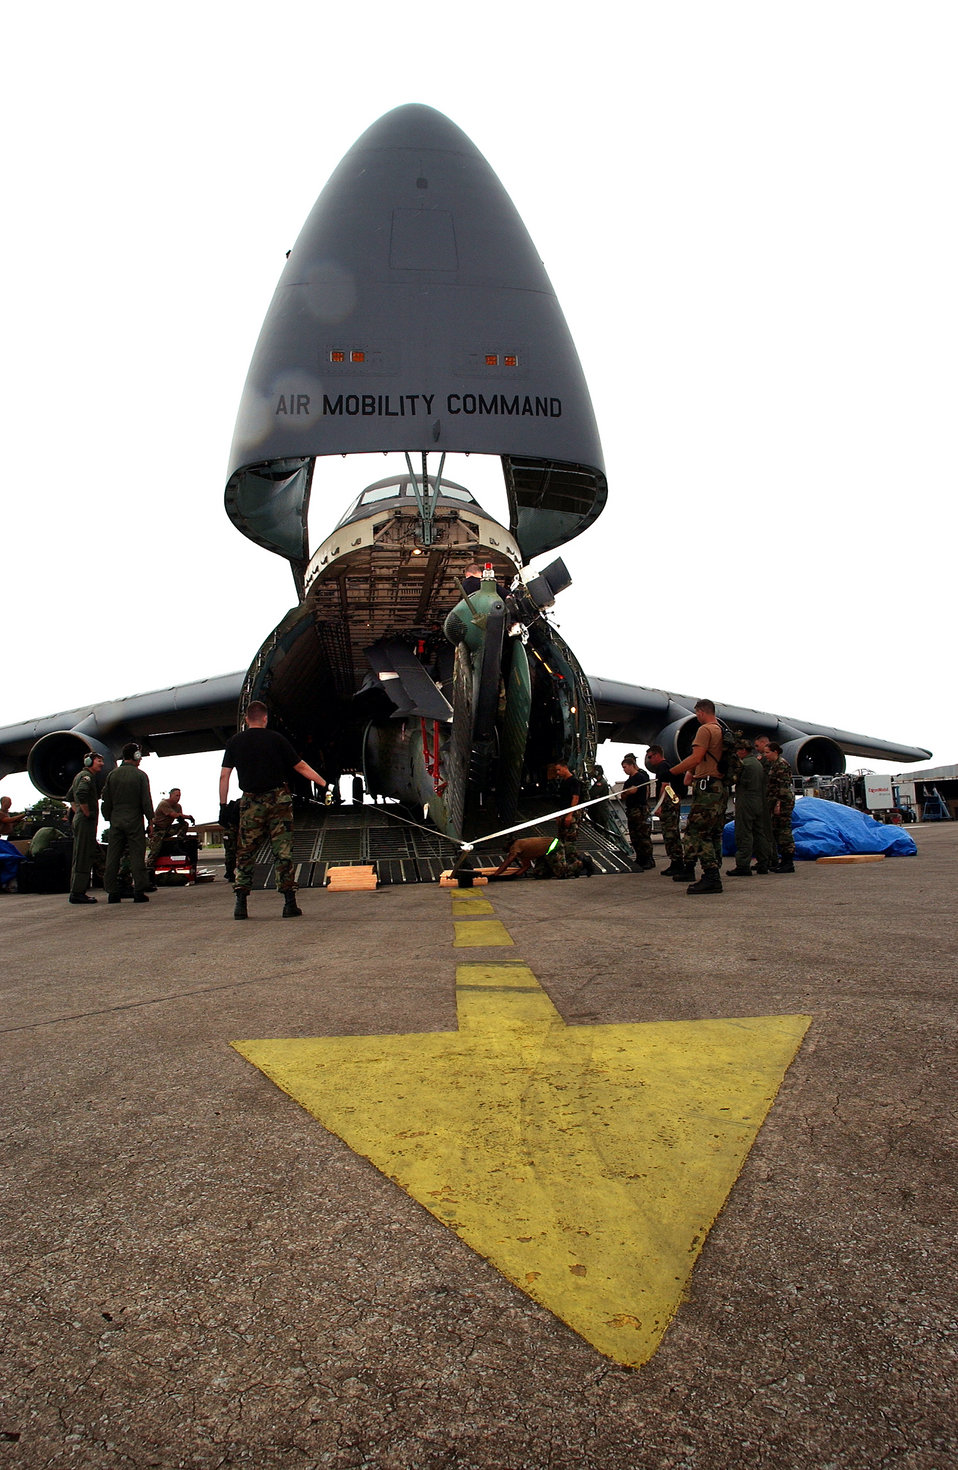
Front end

LUNGI, Sierra Leone -- An HH-60G Pave Hawk helicopter with the 56th Rescue Squadron, Naval Air Station Keflavik, Iceland, is loaded onto a C-5 Galaxy from the 301st Airlift Squadron, Travis Air Force Base, Calif. The 398th Air Expeditionary Group is currently in Sierra Leone and Senegal to support efforts in Liberia.